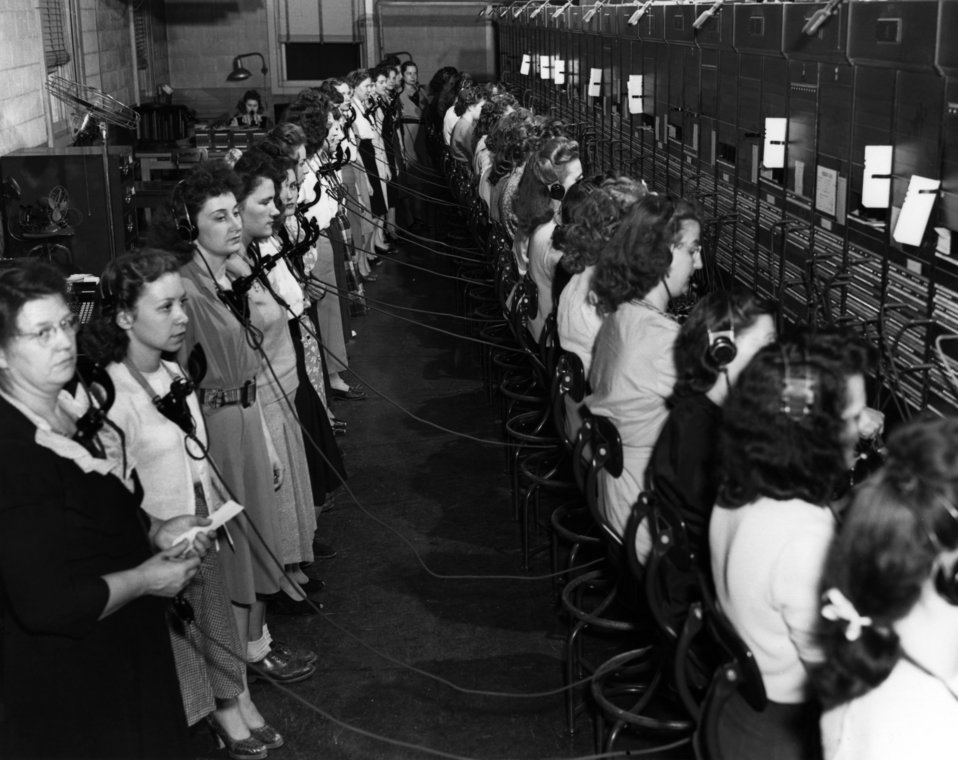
Telephone Switch Board Switchover Oak Ridge

3083-2 DOE photo Ed Westcott 11-2-1946 Shift change at telephone switchboard Oak Ridge Tennessee